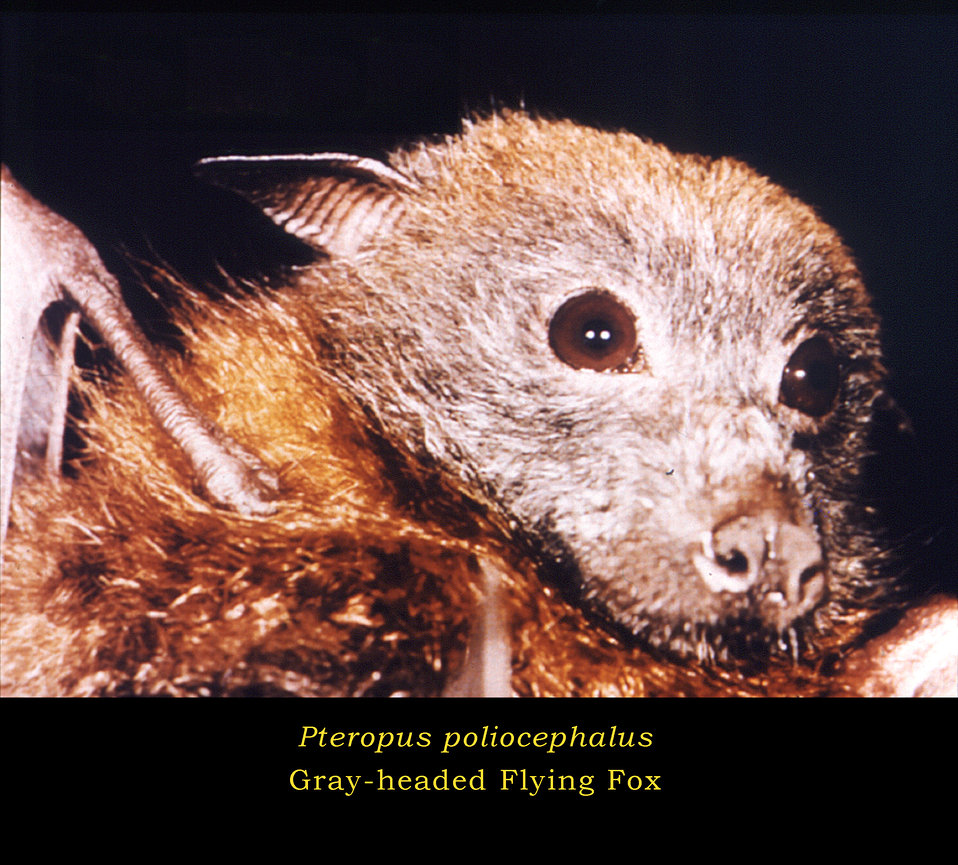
This image depicts the head of a 'Gray-headed Flying Fox', Pteropus poliocephalus.The gray-headed flying fox is a member of the order Chiroptera, and due to their size, the subfamily Megachiroptera, though not all the 'megabat' members are giants, ranging in size from 2.4 to 16 inches in length.